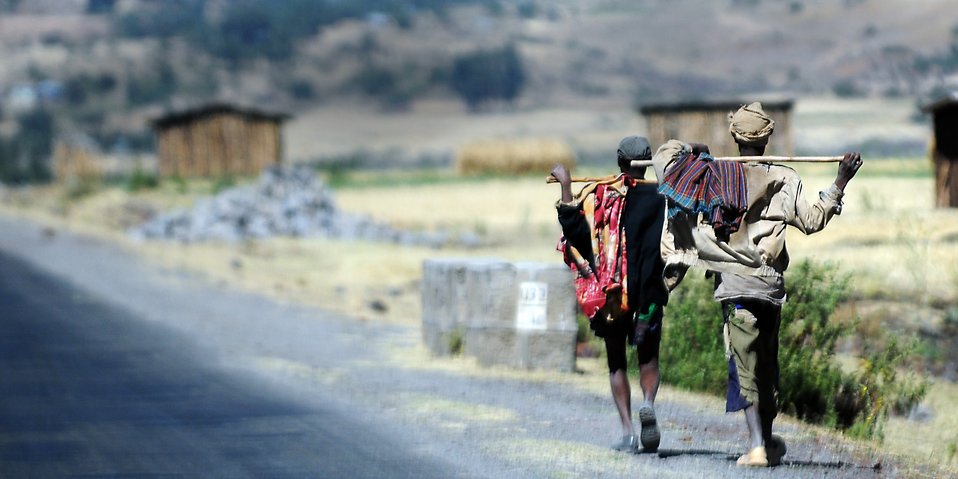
144 hours in Ethiopia: Africa remembers

Two men walk along the road to Addis Ababa, Ethiopia, Dec. 8, 2011. People in Ethiopia may choose to leave their rural homes and walk to the cities to seek work.